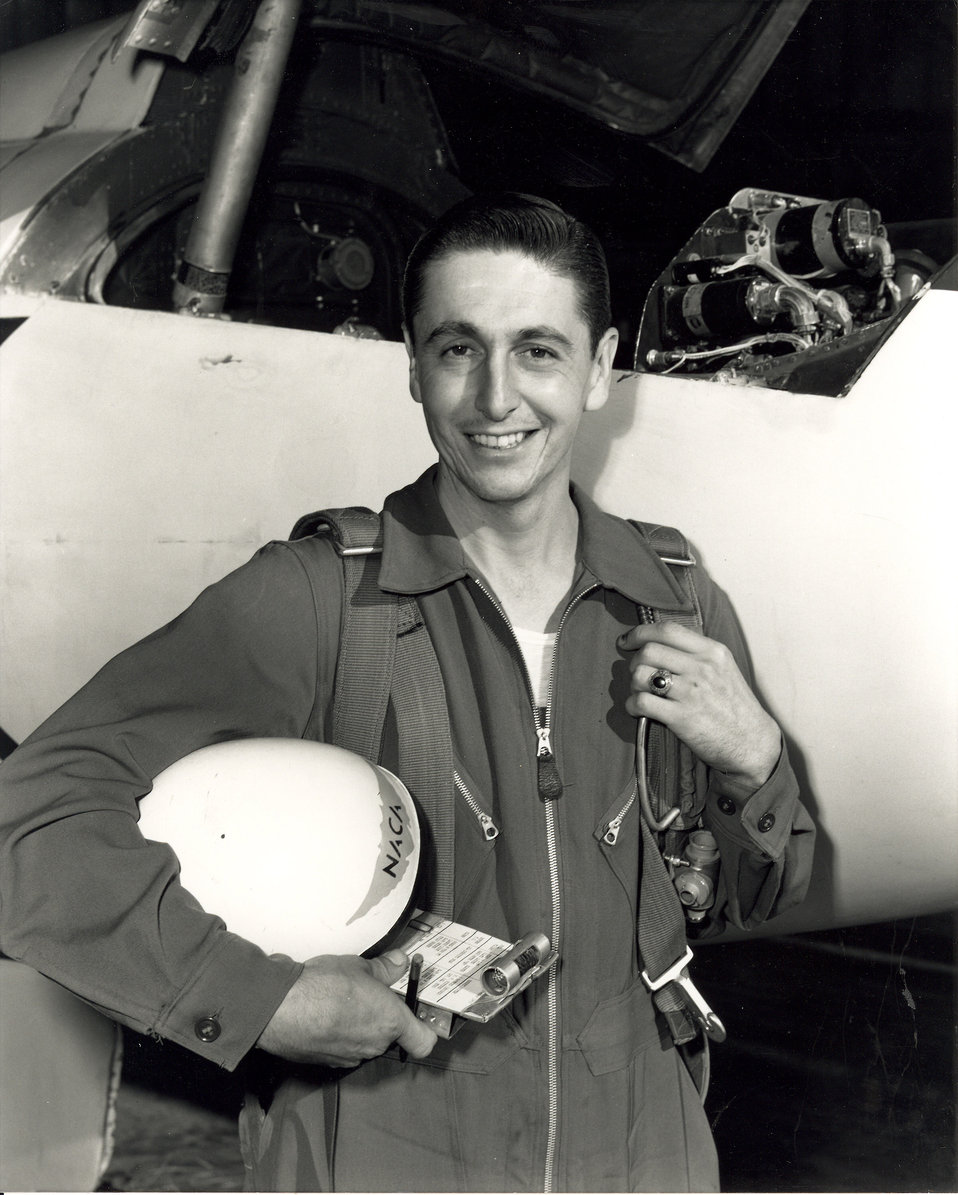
A. Scott Crossfield, test pilot

A. Scott Crossfield with the Douglas D-558-2 Skyrocket after his record-breaking Mach 2 flight, Nov. 20, 1953. In 1993, NASA awarded him the Distinguished Public Service Medal for his contributions to aeronautics and aviation for 50 years.